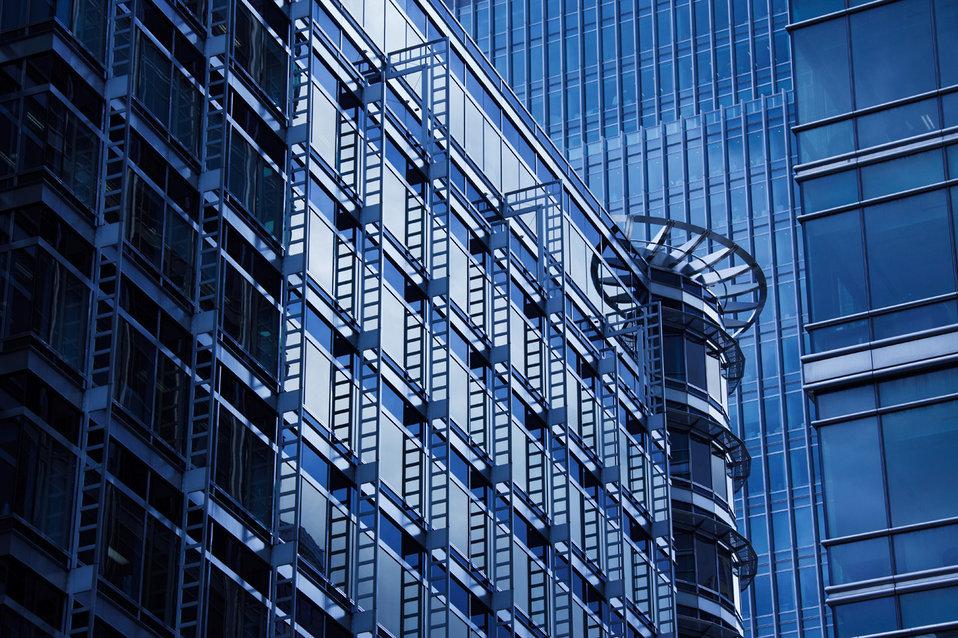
Architectural background photo.